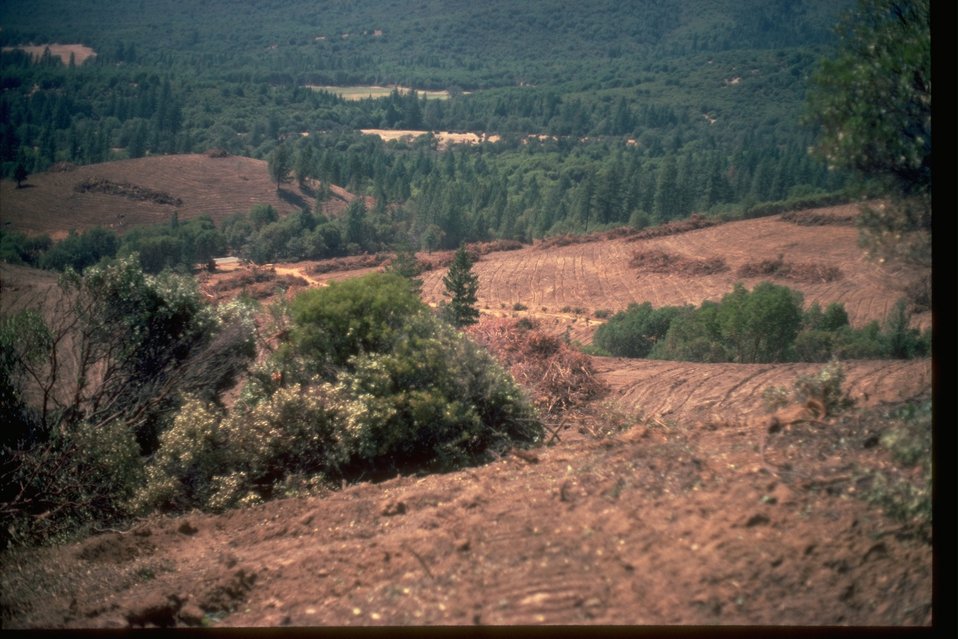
Scarification and Ripping Brushfield Conversion